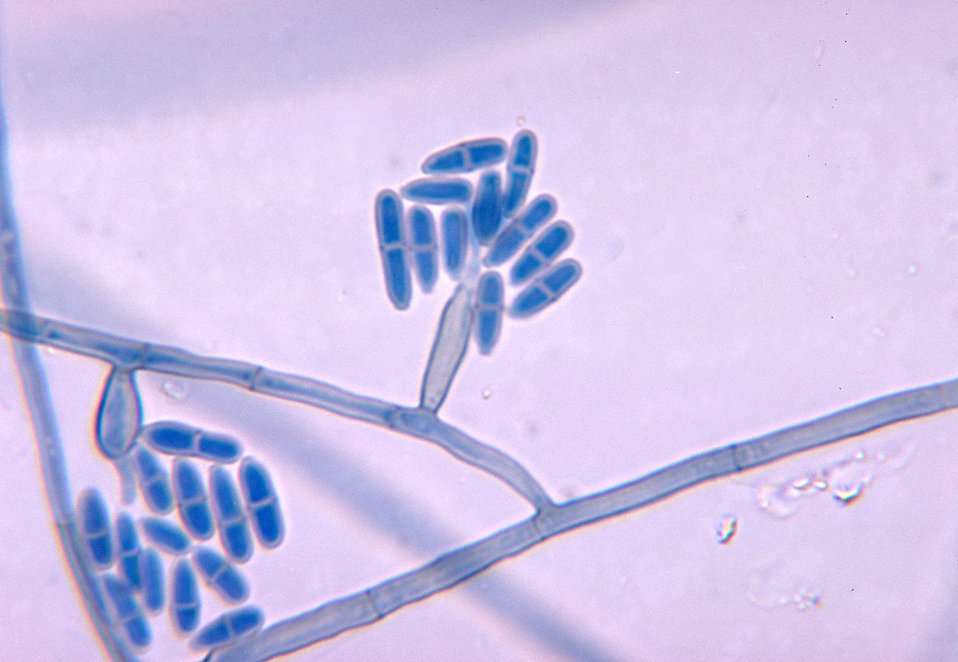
This micrograph depicts the conidia-laden conidiophores of the fungal organism Exophiala salmonis.